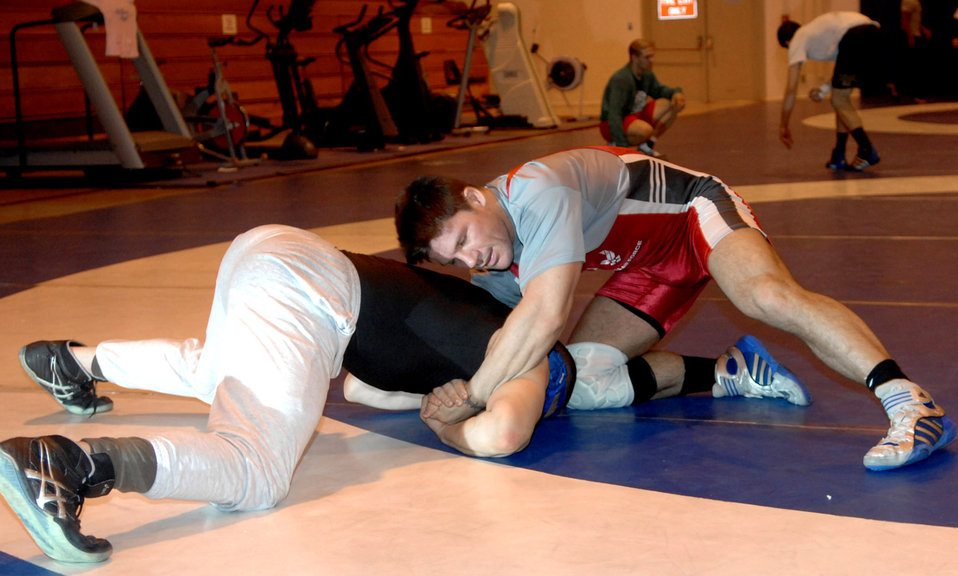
Air Force Wrestling Team selects athletes for 2008 season

Nader Maghribe (left) and Brett Spangler practice their wrestling moves in preparation for the Armed Forces Championship March 5 at the fitness center on Mountain Home Air Force Base, Idaho. Beginning Feb. 13, almost two dozen potential candidates for the All Air Force Wrestling Team began tryouts for the 2008 wrestling season. After more than 120 candidates sent applications to Richard Estrella, the Air Force wrestling coach for 21 years, he chose the 13 most-talented athletes to join the team. Maghribe is stationed at Travis AFB, Calif., and Spangler is from Schriever AFB, Colo.,